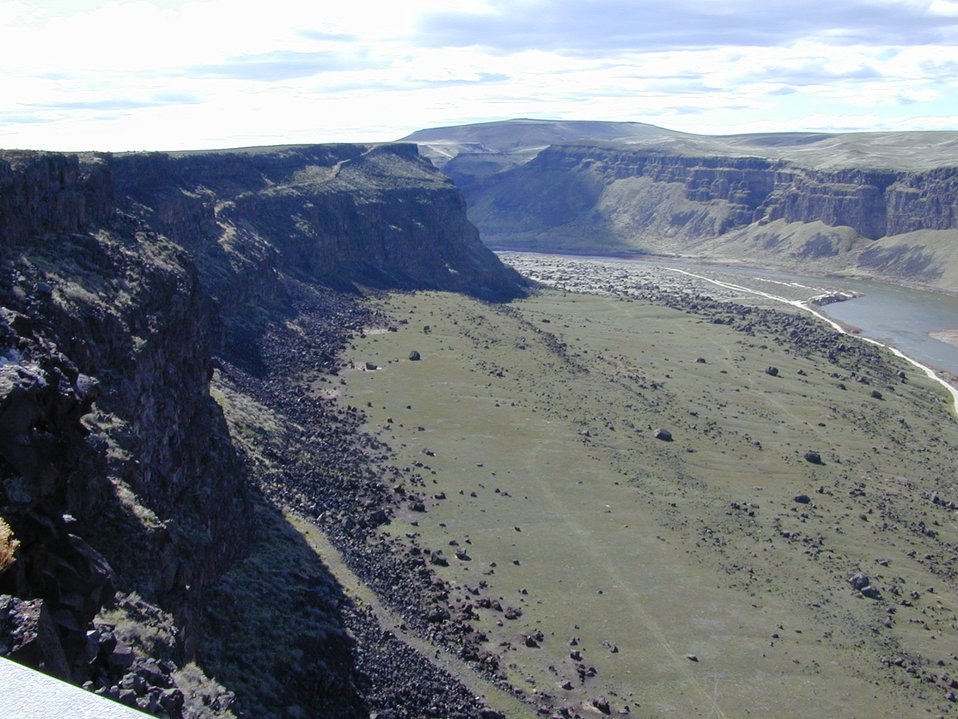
Snake River Birds of Prey National Conservation Area Lower Snake River District LSRD Snake River Canyon Scenic